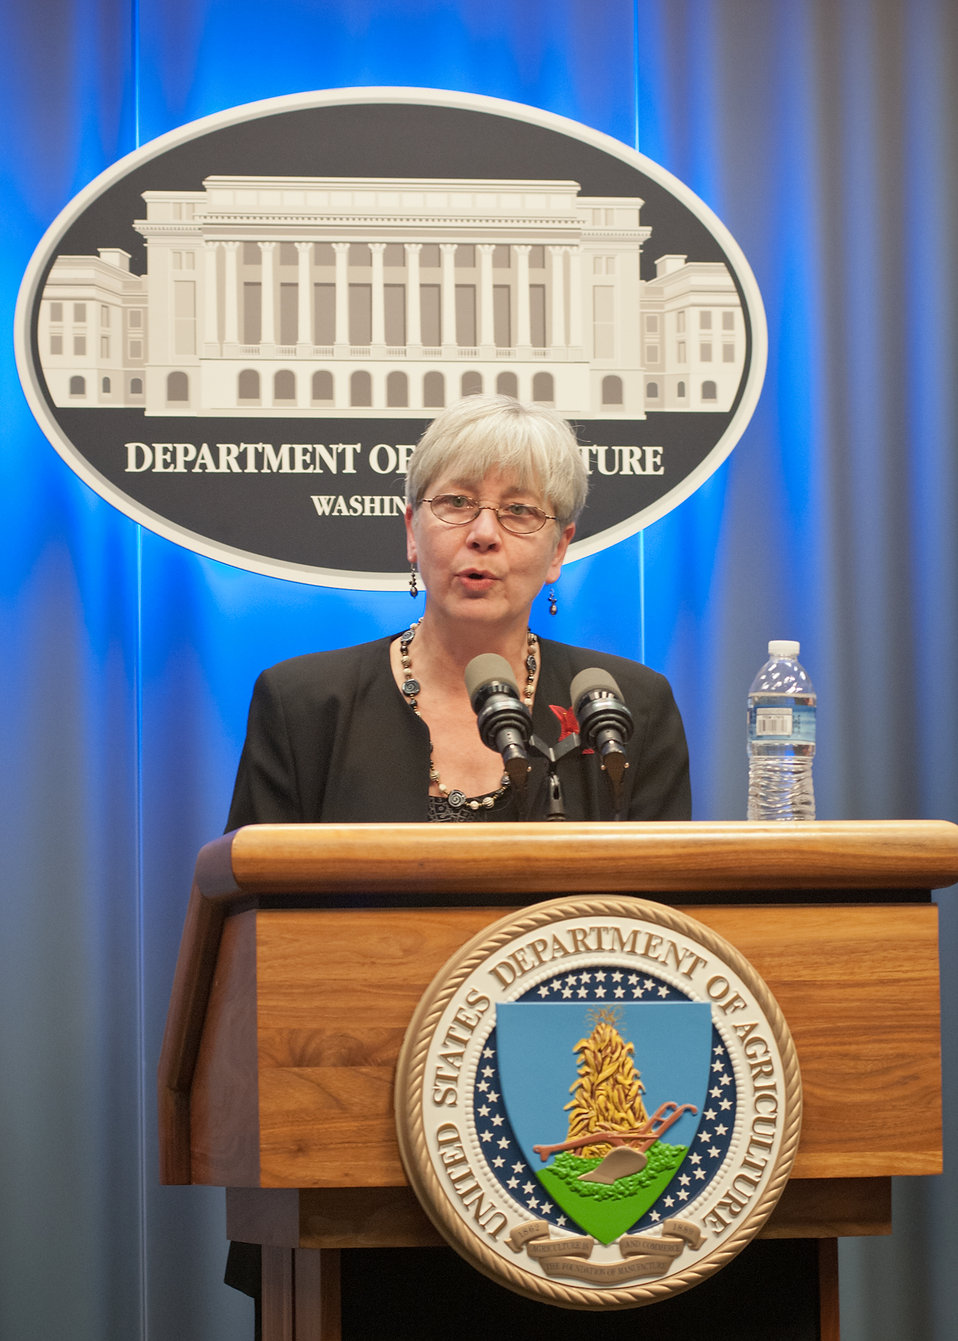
Michelle Smith, Senior Policy Analyst, Food and Drug Administration, Technical Advisory Committee member of the On-Farm Food Safety Project discussed the technical advisory perspective with Agriculture Deputy Secretary Dr. Kathleen Merrigan and leaders from agriculture and food organizations during the release of the On-Farm Food Safety Project Tool, www.onfarmfoodsafety.org at the United States Department of Agriculture in Washington, D.C., on Thursday, December 15, 2011. The On-Farm Food Safety Project is the first of its kind and was developed by a broad coalition of farm and produce industry partners with lead funding from the USDA Risk Management Agency.